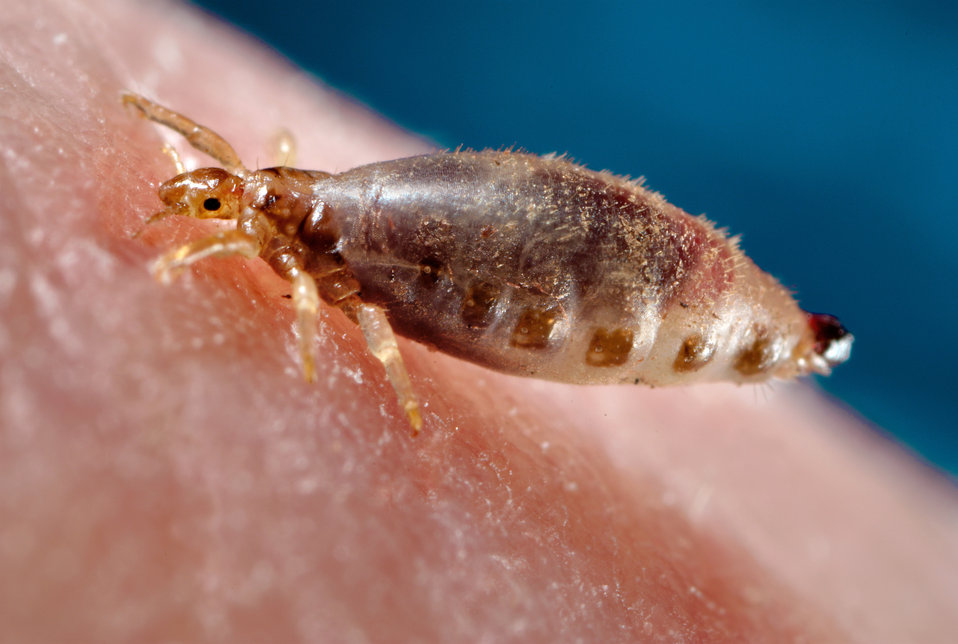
This 2006 photograph depicted a lateral view of a female body louse, Pediculus humanus var. corporis, as it was obtaining a blood-meal from a human host, who in this case, happened to be the photographer. Note its elongated abdominal region without any processes, and three pairs of legs, which are all equal in length and width, features displayed by Pediculus members.Body lice are parasitic insects that live on the body, and in the clothing or bedding of infested humans. Infestation is common, found worldwide, and affects people of all races. Body lice infestations spread rapidly under crowded conditions where hygiene is poor, and there is frequent contact among people. Note the sensorial setae, or hairs that cover the louse's body, which pick up, and transmit information to the insect about changes in its environment such as temperature, and chemical queues. The dark mass inside the abdomen is a previously ingested blood meal.